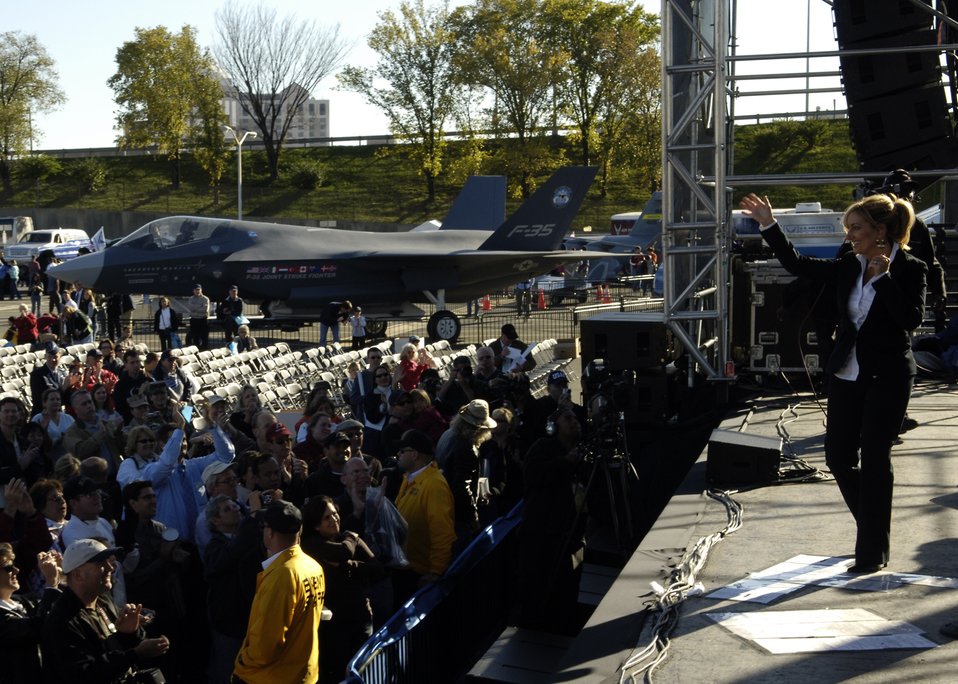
Lee Ann Womack performs

Country music performer Lee Ann Womack performs for more than 25,000 spectators gathered at the Air Force open house at the Pentagon on Saturday, Oct. 14, 2006. The concert followed the official dedication ceremony of the Air Force Memorial.